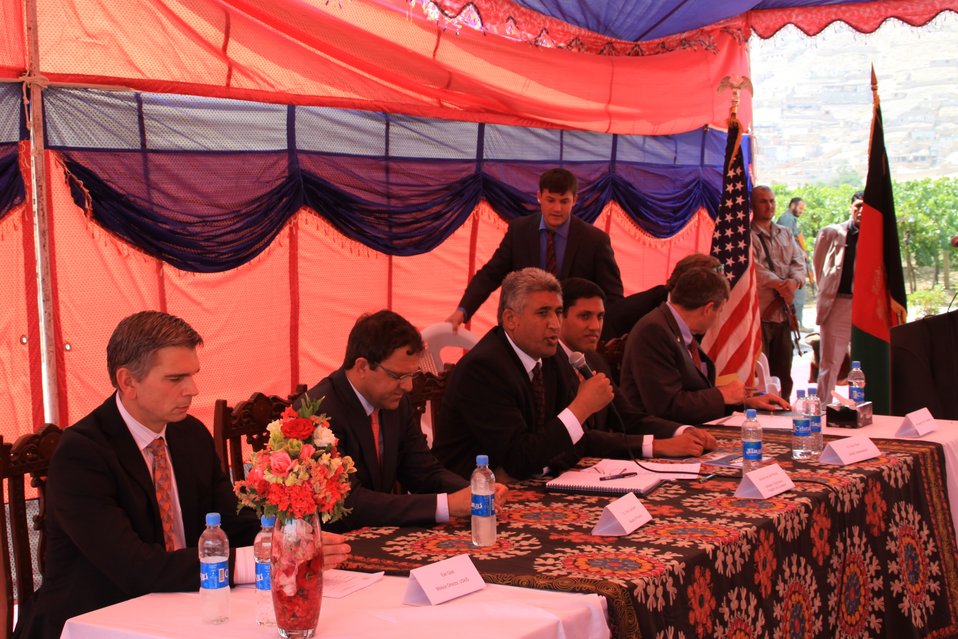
Badam Bagh Farm